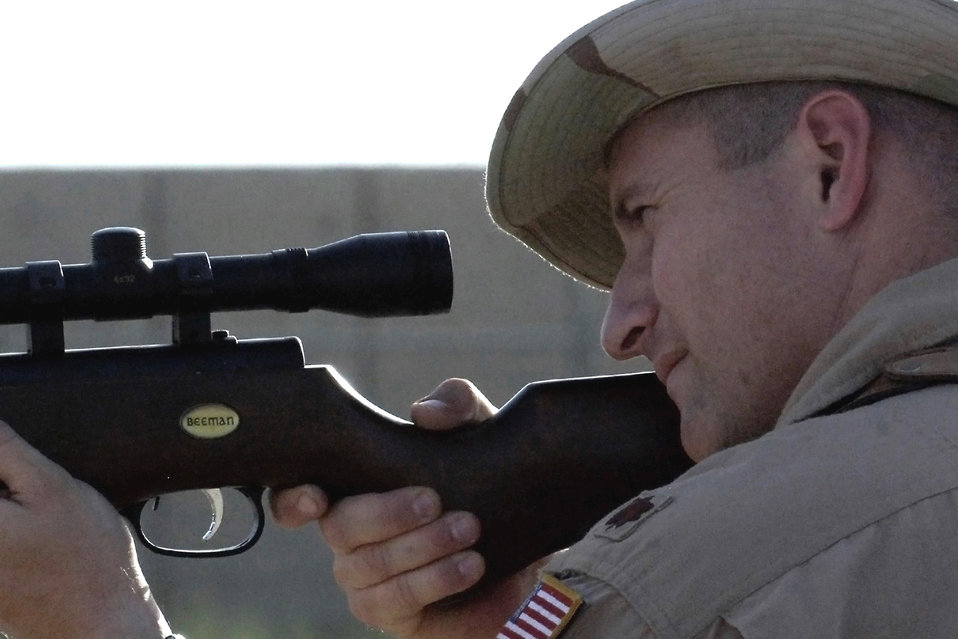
BASH program

Maj. David Aumack takes aim at a bird June 3, 2011, as part of the Bird/Wildlife Aircraft Strike Hazard program at Baghdad International Airport. The BASH program is designed to reduce wildlife hazards by keeping birds and other animals away from runways and planes. Major Aumack is a flight safety officer assigned to the 321st Air Expeditionary Wing.